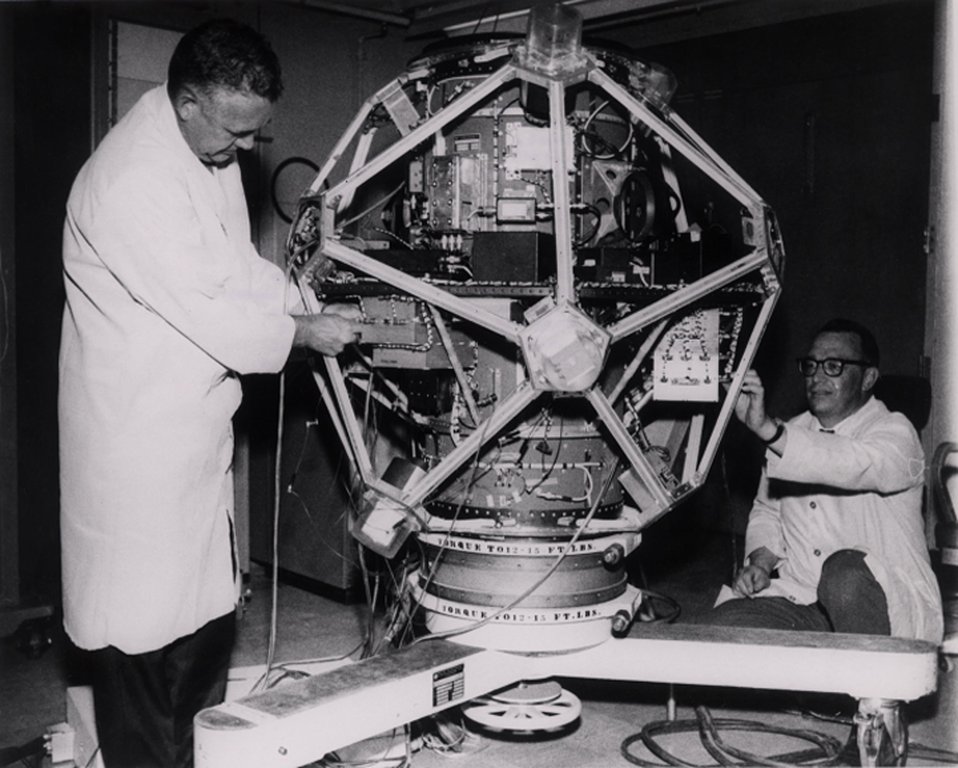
Vela research satellites use Sandia Laboratory designed logic systems and Los Alamos Scientific Laboratory designed detectors for the detection of nuclear devices detonated in space.